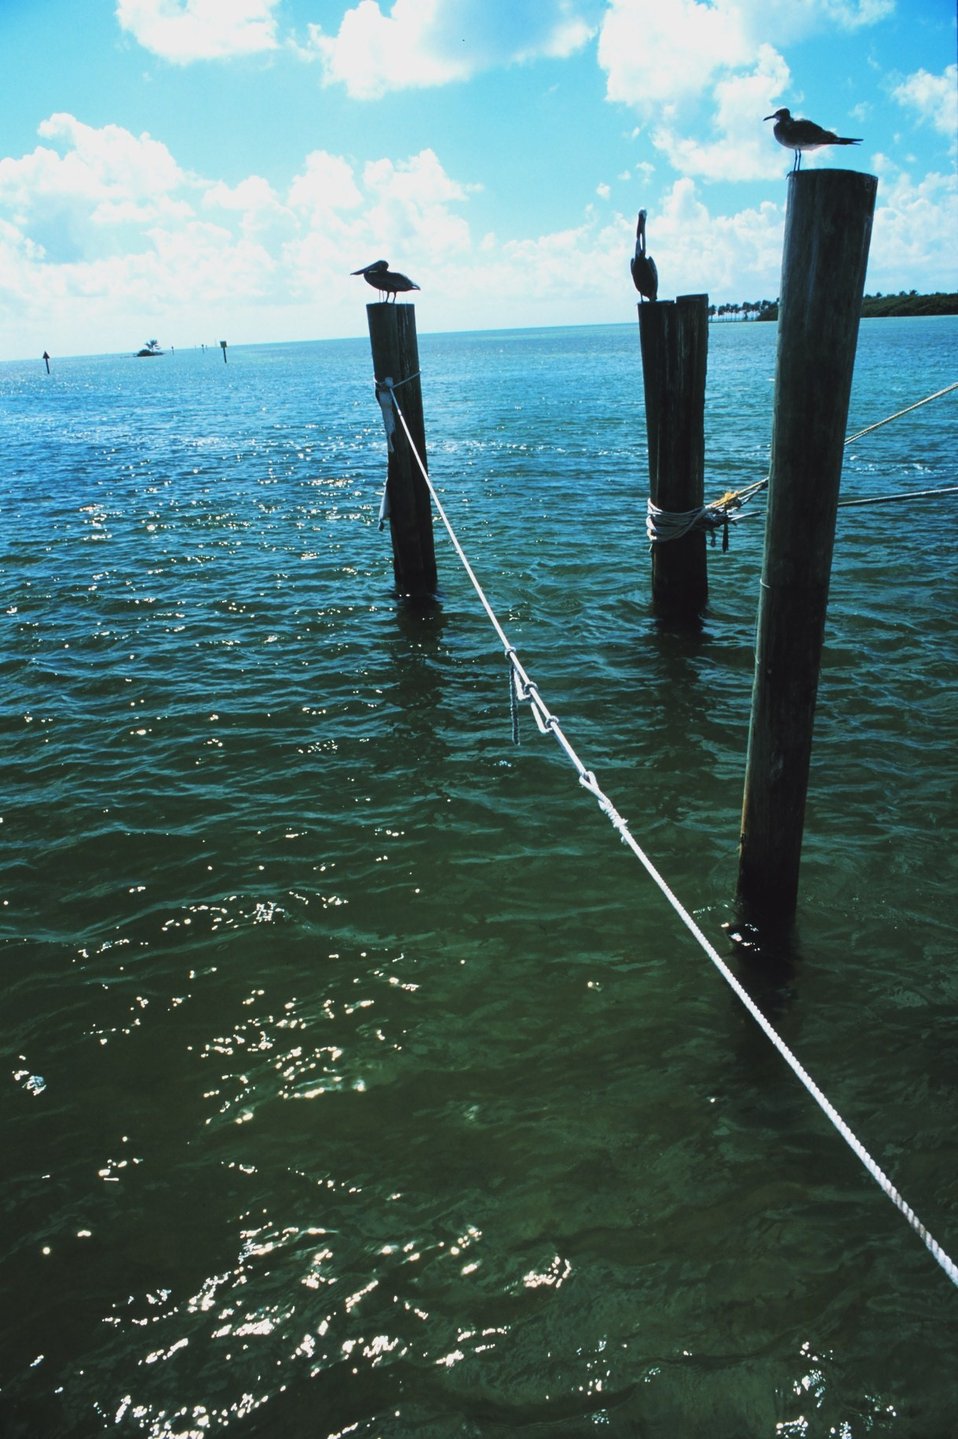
Pelicans and gulls relax on handy pilings